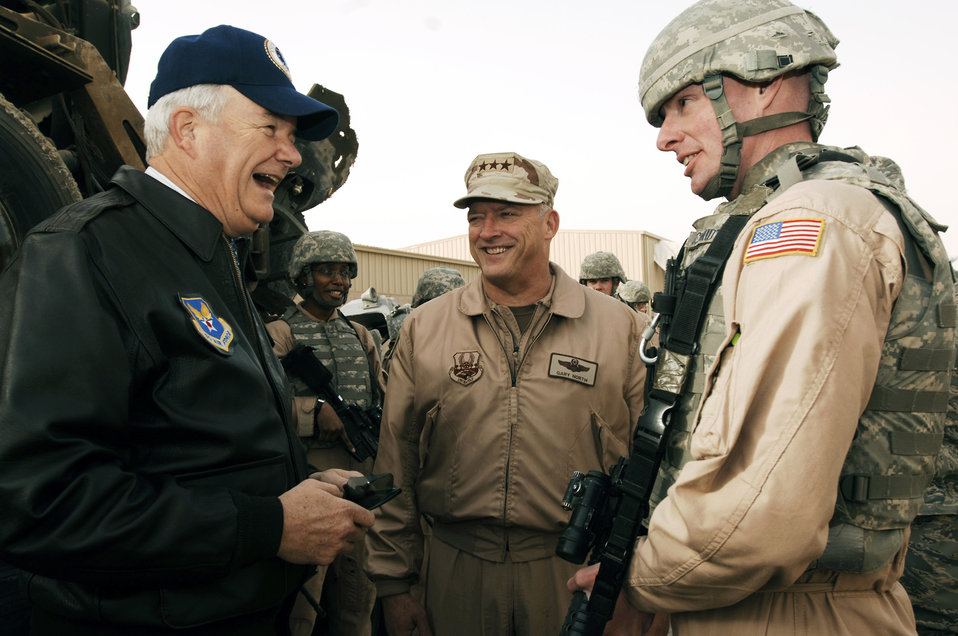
SECAF addresses Deployed Airmen

Secretary of the Air Force Michael Wynne (left), Lt. Gen. Gary North (center), U.S. Central Command Air Forces commander, talk with Tech. Sgt. Douglas Schmidt during a damaged M915 semi-tractor trailer display during the SECAFs visit Feb. 1. The SECAF spoke with more than 400 Airmen during his visit and gained greater insight on the 6,800 plus Airmen deployed throughout Southwest Asia in non-traditional Air Force functions. Sergeant Schmidt is a convoy commander from the 586th Expeditionary Logistics Readiness Squadron, 424th Medium Truck Detachment.